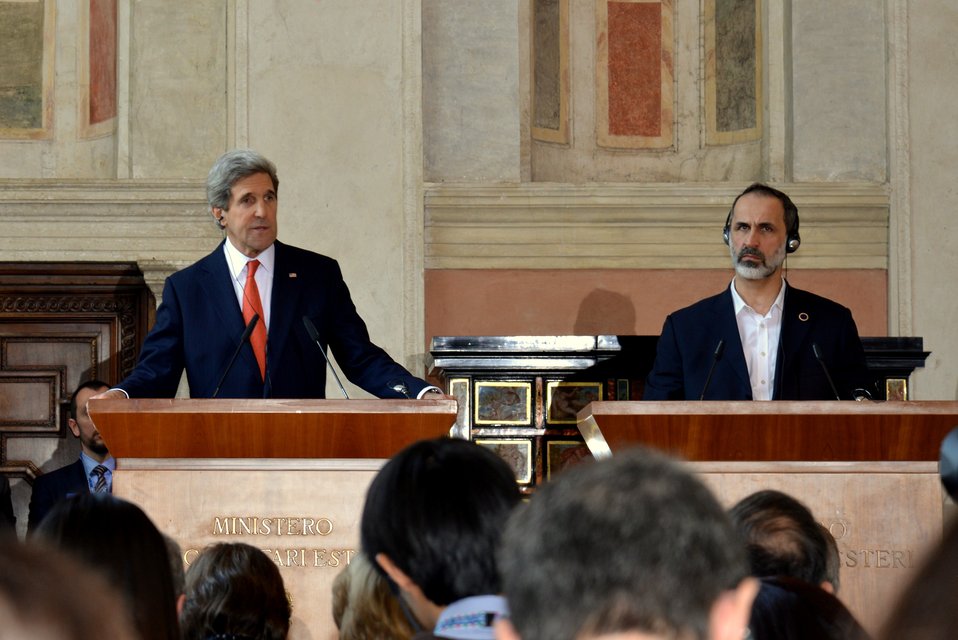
Secretary Kerry, Syrian Opposition Council Chairman al-Khatib, and Italian Foreign Minister Terzi Address Reporters

U.S. Secretary of State John Kerry Kerry delivers a joint press statement with Syrian Opposition Council Chairman Mouaz al-Khatib and Italian Foreign Minister Giulio Terzi , not pictured, in Rome, Italy, on February 28, 2013.